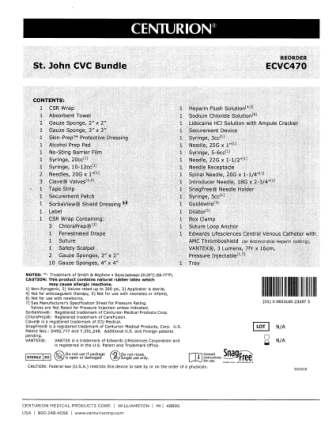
RECALLED - Convenience kits which contain bacteriostatic sodium chloride solution by American Regent

April 1, 2011 - Product Recall - Centurion Medical Products Initiates Voluntary Recall of Customized Convenience Kits (including select Central Venous Catheter, PICC Insertion, and VAD Trays) that contain American Regent’s Bacteriostatic Sodium Chloride Injection, USP, 0.9% 30 mL Multiple Dose Vials.